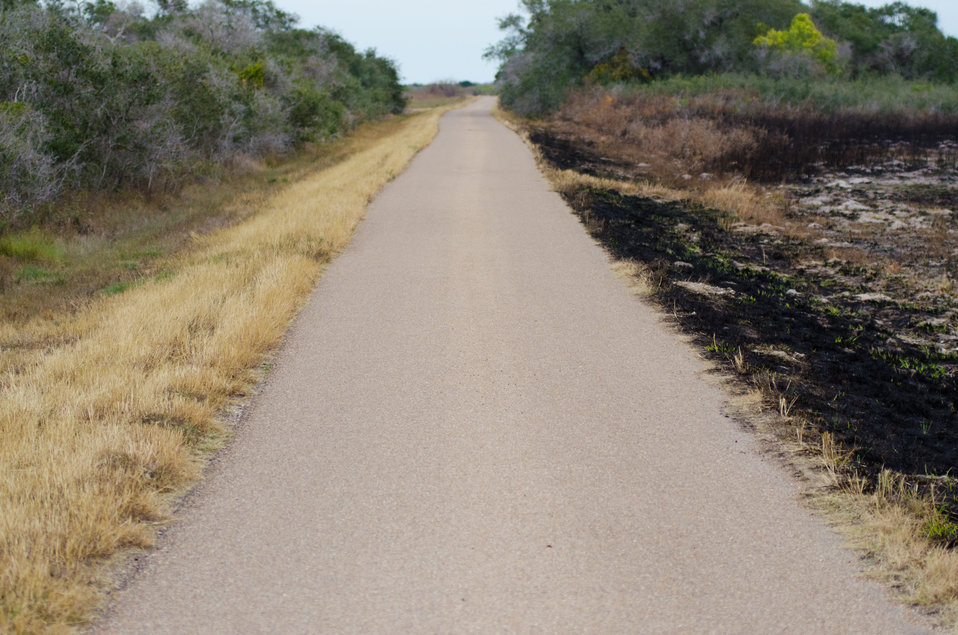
One week ago Aransas National Wildlife Refuge, in Austwell, TX, on Friday, December 16, 2011 used prescribed burns on this portion of the refuge. Typical of a coastal prairie shoreline, natural occurrences of fire are part of a healthy ecosystem. Phragmites reed grass and other plant roots stabilize the ground and were unharmed by the fire. Healthy growth is already seen from the charred grass and ashes on the ground. A refuge road also serves as an effective firebreak.
State Conservationist Salvador Salinas commented on the USDA-NRCS Gulf of Mexico Initiative (GoMI) during a press conference, about improving water quality, habitat, and the health of the Gulf ecosystem. “Launching this initiative is a top priority for NRCS in Texas because the Gulf of Mexico is one of our state’s premier natural resources. It provides vital habitat for wildlife, and creates jobs in industries that depend upon them. The health of this resource is essential to Texas as well as to the nation,” said Salvador Salinas. The Texas initiative focuses on three watersheds in Refugio, Calhoun, Victoria and Aransas counties and ultimately the Gulf of Mexico.
“What is really compelling about GoMI and other similar conservation efforts is that they prove that Texas farmers and ranchers not only feed and clothe us and power our vehicles, but they can also help protect and restore our rivers and provide more habitat for wildlife,” stated Salinas. “That’s why it is important that this conservation project is not about taking productive farm land out of production. This is a working lands initiative, so that not only are we helping to restore the health of the Gulf, but we’re also helping to sustain and enhance the productivity of the Gulf’s farms and ranches.”
Nationally, USDA-NRCS is dedicating up to $50 million over three years to this effort.
NRCS will continue to provide proven technical expertise and that of their partners. The anticipated result is improved water quality, stream flows and wildlife habitat.